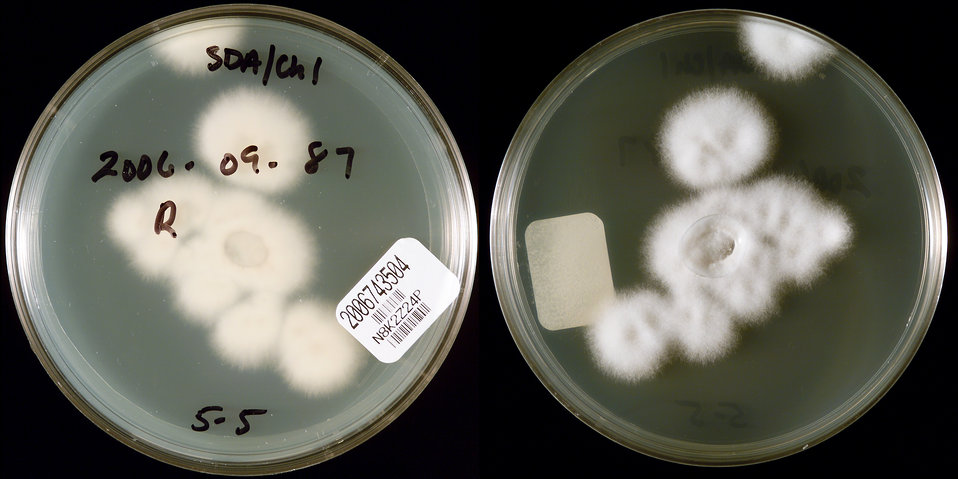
This image depicted two sides of a Petri dish, which had been inoculated with a specimen consisting of the right contact lens, visible on the culture medium, obtained from a Pennsylvania Fusarium keratitis-patient, and had subsequently grown a filamentous colony of Fusarium oxysporum fungal organisms. The type of agar medium in the case of this specimen was Sabouraud Dextrose (SAB). While it is not unusual for Fusarium to cause keratitis, it was the number of affected individuals, which had increased dramatically, predominantly in persons wearing contact lenses, that had warranted this epidemiologic study. The laboratory received cultures which came from two sources: Fusarium spp. isolated from the eyes of patients with fungal keratitis, and cultures from contact lenses, cases and/or lens solution.